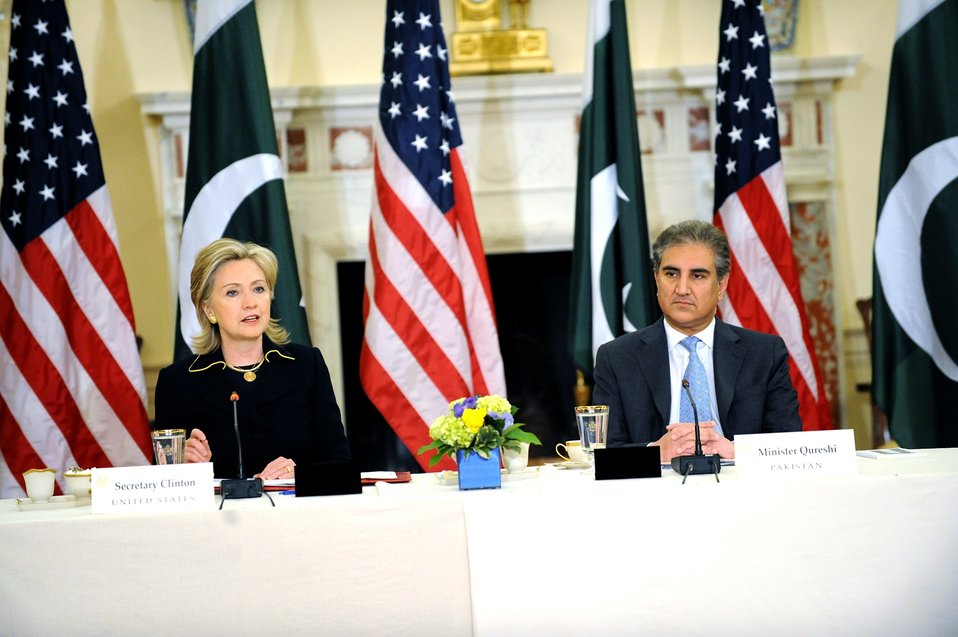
Secretary Clinton With Pakistani Foreign Minister Makhdoom Shah Mahmood Qureshi

U.S. Secretary of State Hillary Rodham Clinton and Pakistani Foreign Minister Makhdoom Shah Mahmood Qureshi listen during the U.S. Pakistan Strategic Dialogue meeting at the U.S. Department of State in Washington, D.C., March 24, 2010.